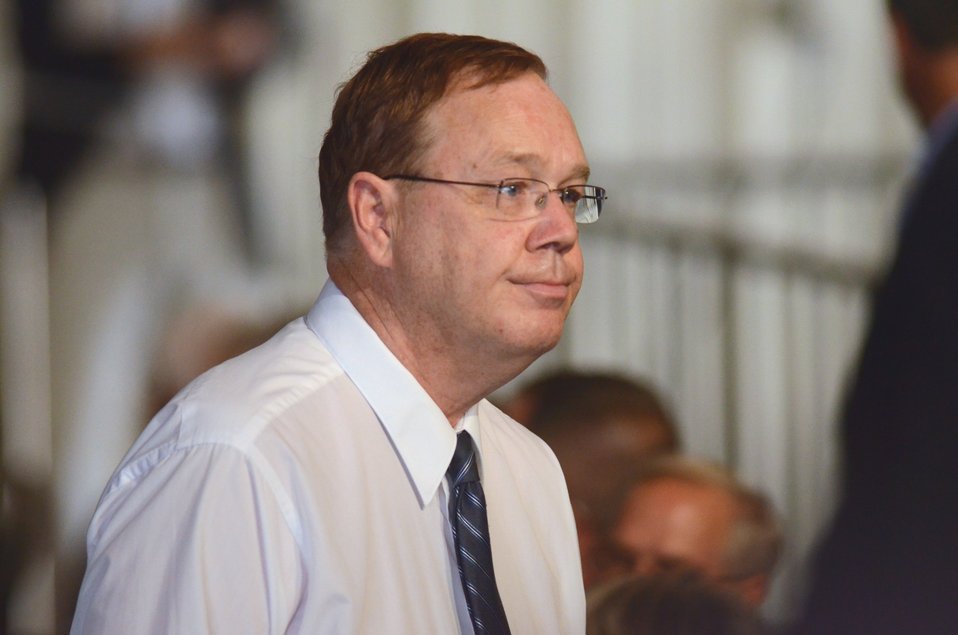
Agriculture Under Secretary for Rural Development Dallas Tonsanger listens to President Barack Obama speaking at the Northeast Iowa Community College, for a White House Rural Economic Forum on Tuesday, Aug. 16, 2011. The President’s visit will focus on agriculture’s contribution to the national economy, and how to create more jobs in rural America.